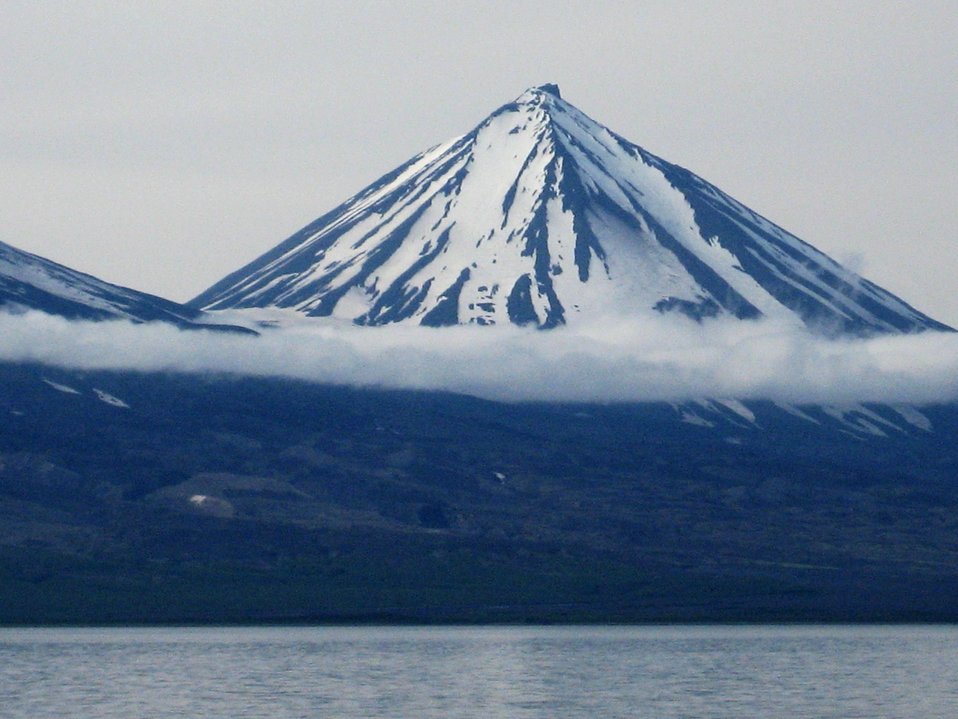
Pavlof Sister Volcano as seen from the Cold Bay area.